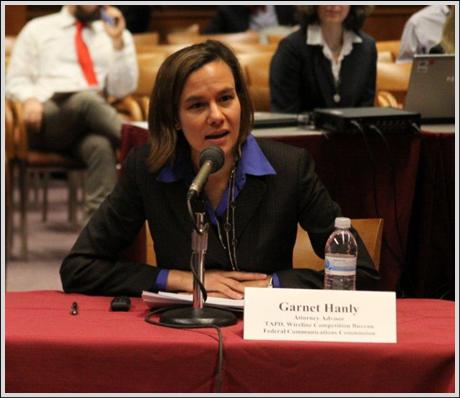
Garnet Hanly, Moderator

Panel 1: What have we Learned from Academic Studies on How to Close the Broadband Adoption Gap